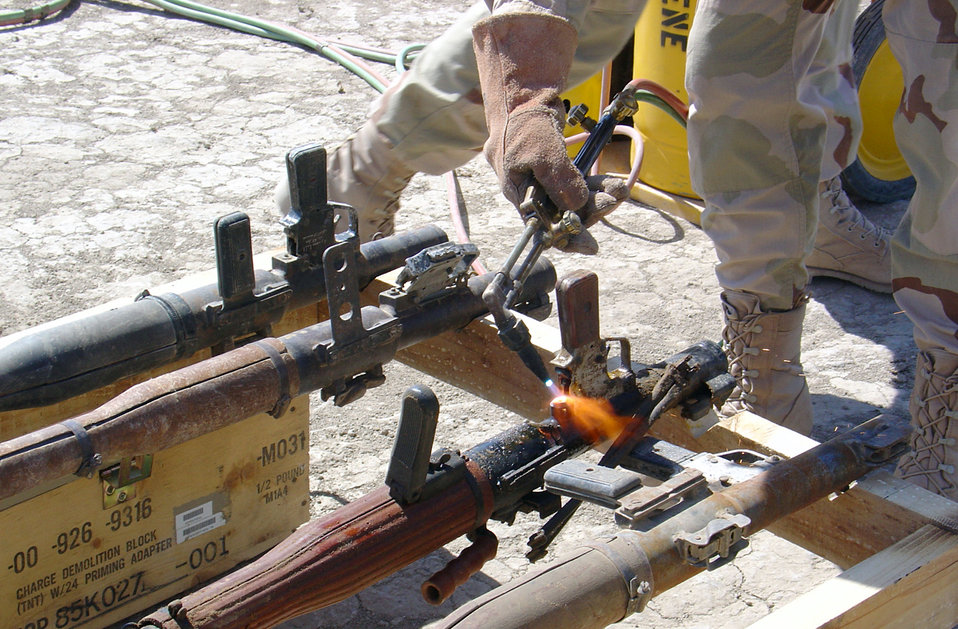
Airmen destroy grenade launchers

TALLIL AIR BASE, Iraq -- A structural craftsman from the 407th Expeditionary Civil Engineer Squadron destroys a rocket-propelled grenade launcher. The squadron's Airmen here destroyed more than 600 launchers collected by coalition forces throughout southern Iraq.